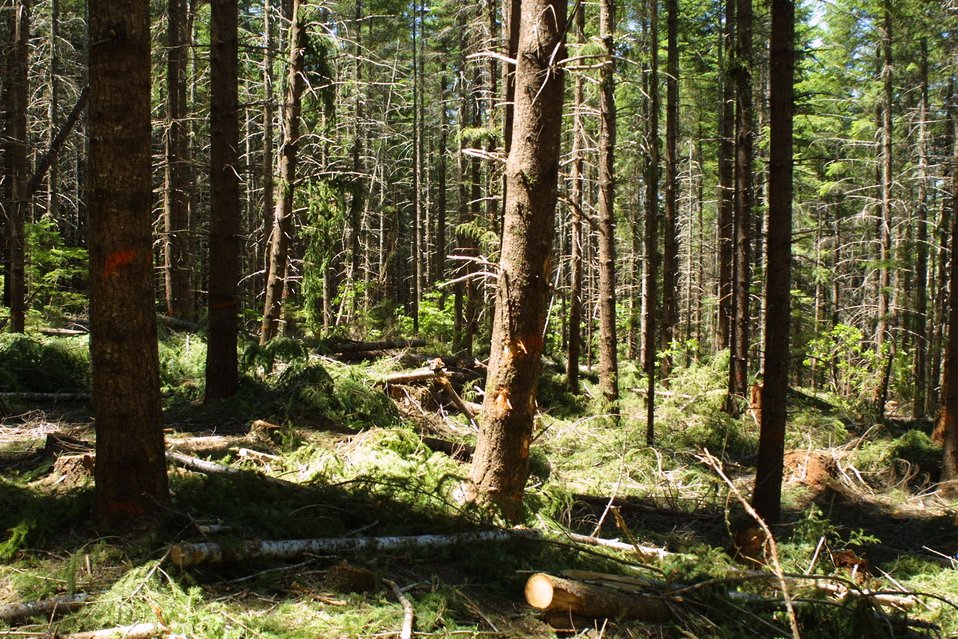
Camas East Timber Sale in Late Successional Reserve.